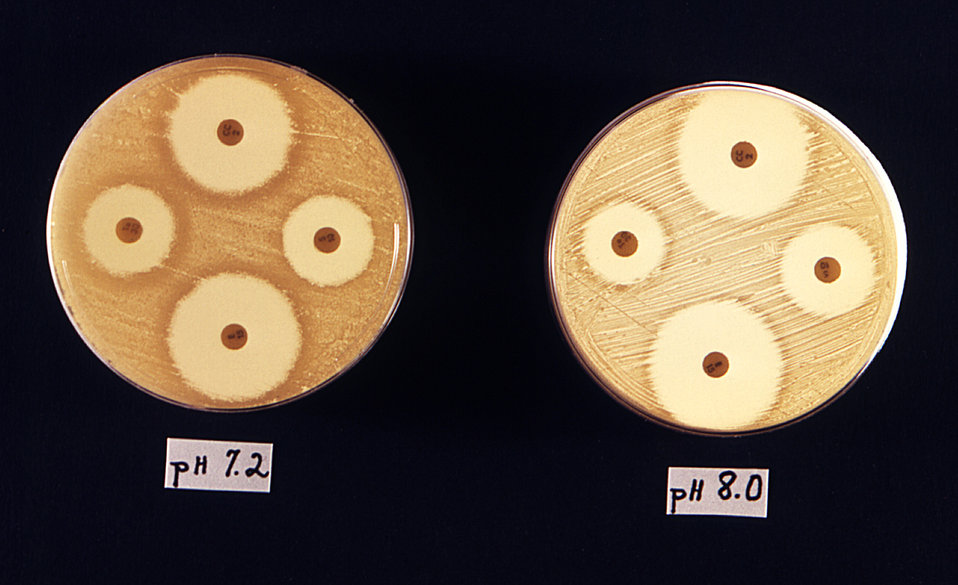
This 1972 image depicted two Mueller-Hinton agar culture plates that had been used in an antibiotic susceptibility test (AST). The pH of the left plate was labeled as 7.2, while the plate at right was labeled at a value of 8.0, which was slightly more alkaline than the left plate. Known as the Kirby-Bauer method, each of the small labeled discs, or wafers, contained an antibiotic cocktail. The light halos surrounding each disc, also known as 'reaction zones', represented regions in which the bacteria on the agar's surface did not thrive, due to their sensitivity to the antibiotic that had been soaked into these respective discs. Note the differences in bacterial growth, due to the differing pH values, evidenced by the slightly larger reaction zones in the more alkaline plate on the right, indicating reduced bacterial growth around each disc.